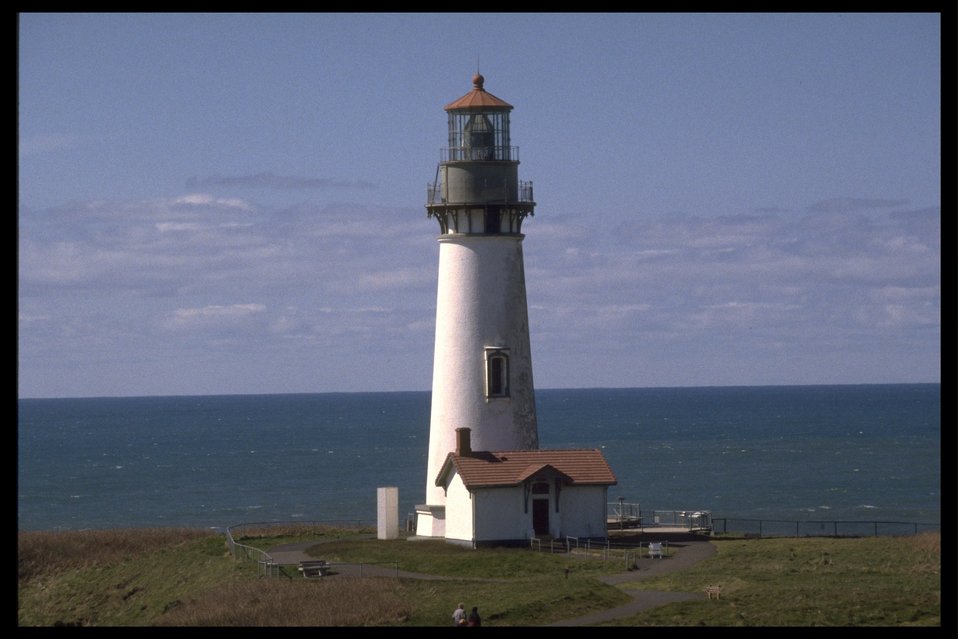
Yaquina Head Lighthouse.